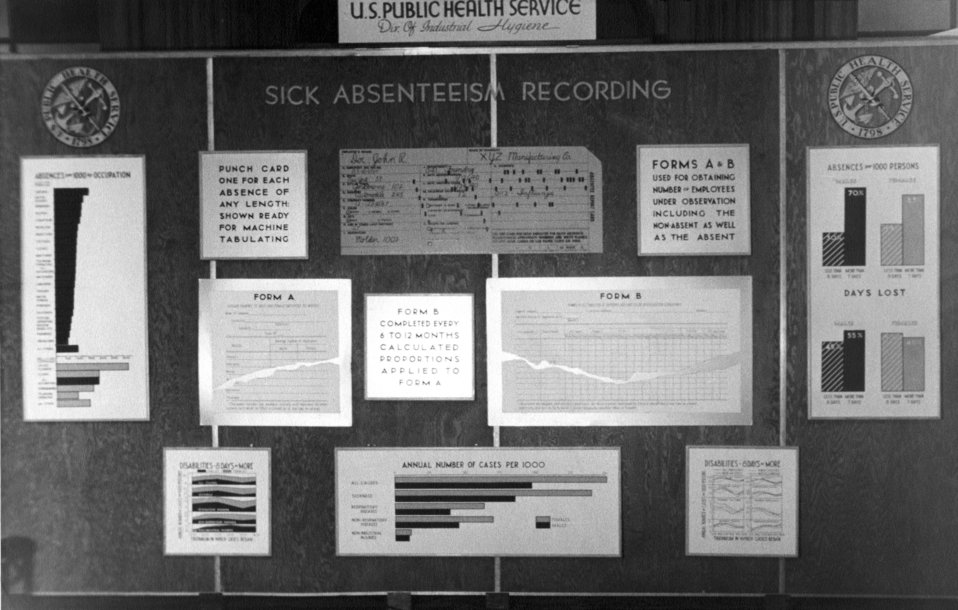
Provided by the Center for Disease Control's (CDC), National Institute for Occupational Safety and Health (NIOSH), this historic image depicted an exhibit produced by the National Institute of Health (NIH), Division of Industrial Hygiene entitled, 'Sick Absenteeism Recording' which was being displayed at an American Medical Association (AMA) June, 1940 New York meeting. See PHIL 9714 for another view of this exhibit.